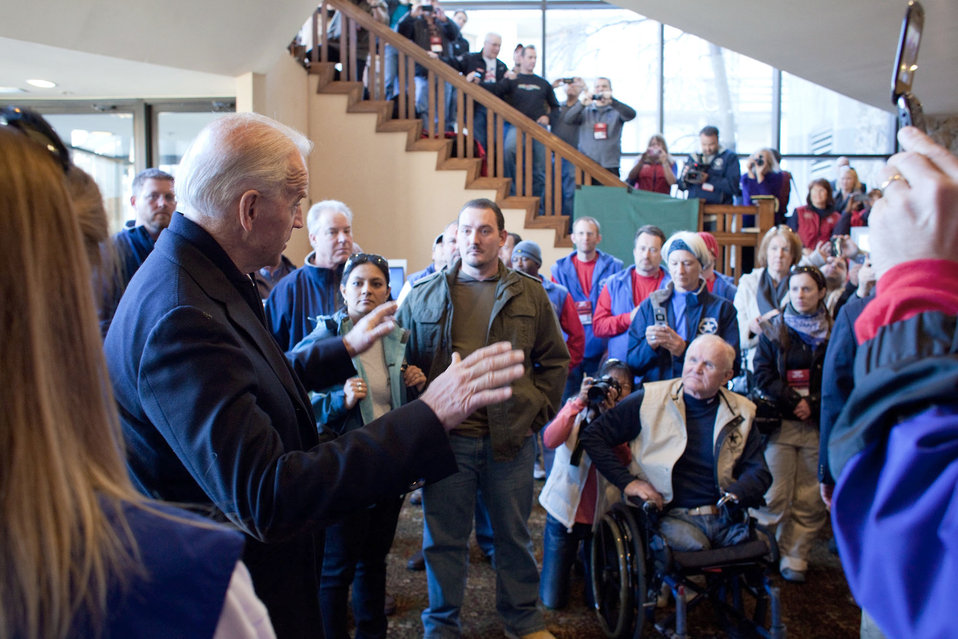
Vice President Biden

Vice President Joe Biden greets volunteers during registration for the 25th annual National Disabled Veterans Winter Sports Clinic March 27, 2011, in Snowmass Village, Colo. The program, which brings together nearly 400 veterans with disabilities through adaptive winter sports, is organized by the Veterans Affairs Department and the Disabled American Veterans.